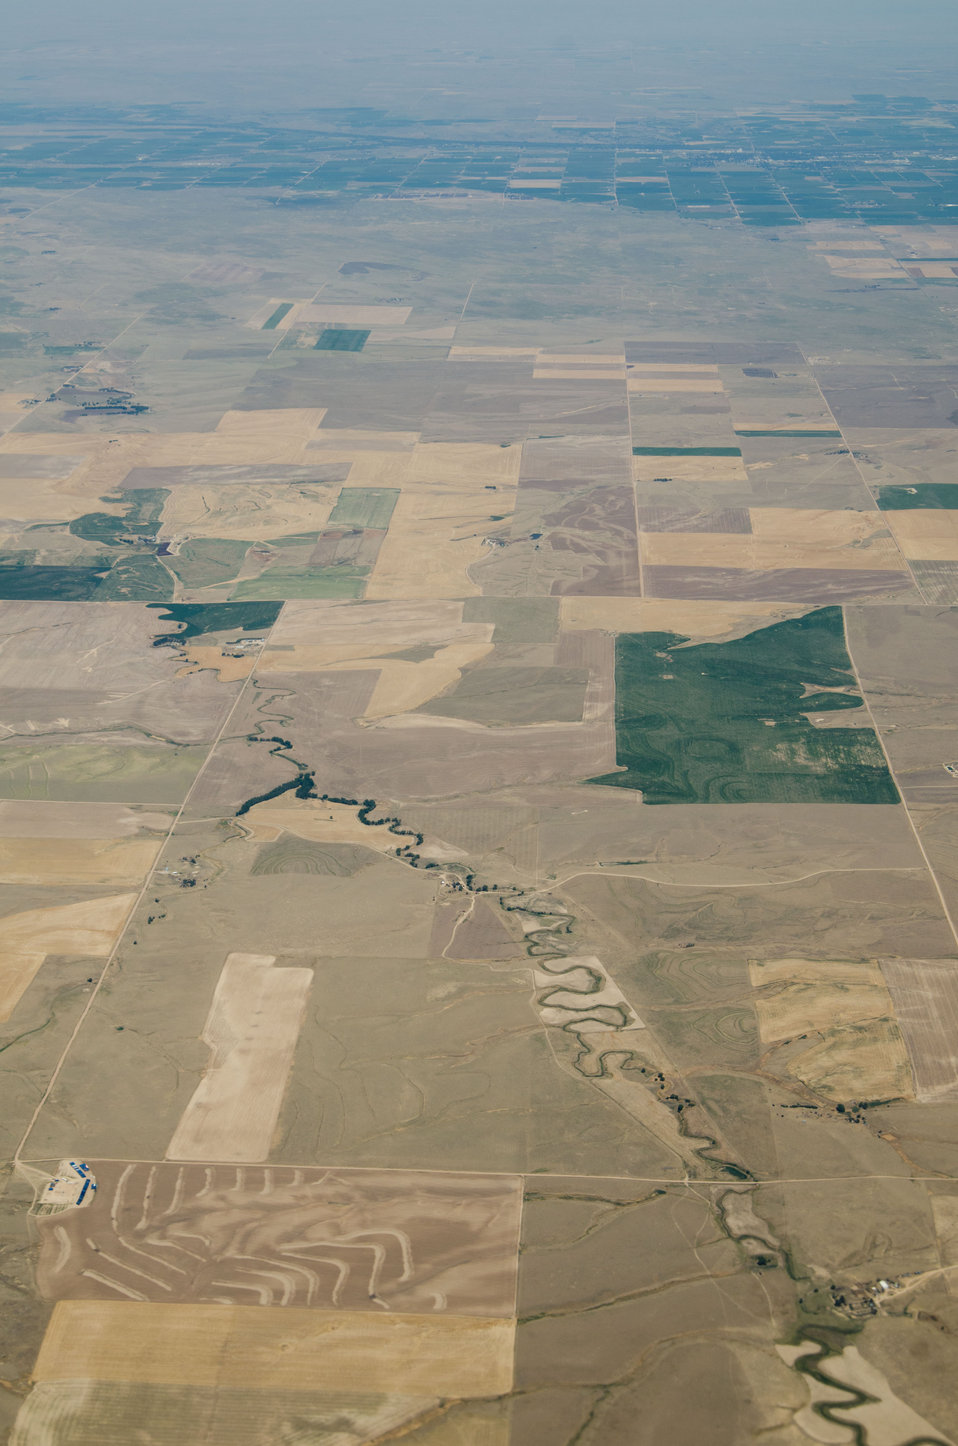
Aerial views of drought affected Colorado farm lands, 107 miles east of Denver, Colorado on Saturday, July 21, 2012. Green areas are irrigated, the yellow areas are dryland wheat crops.